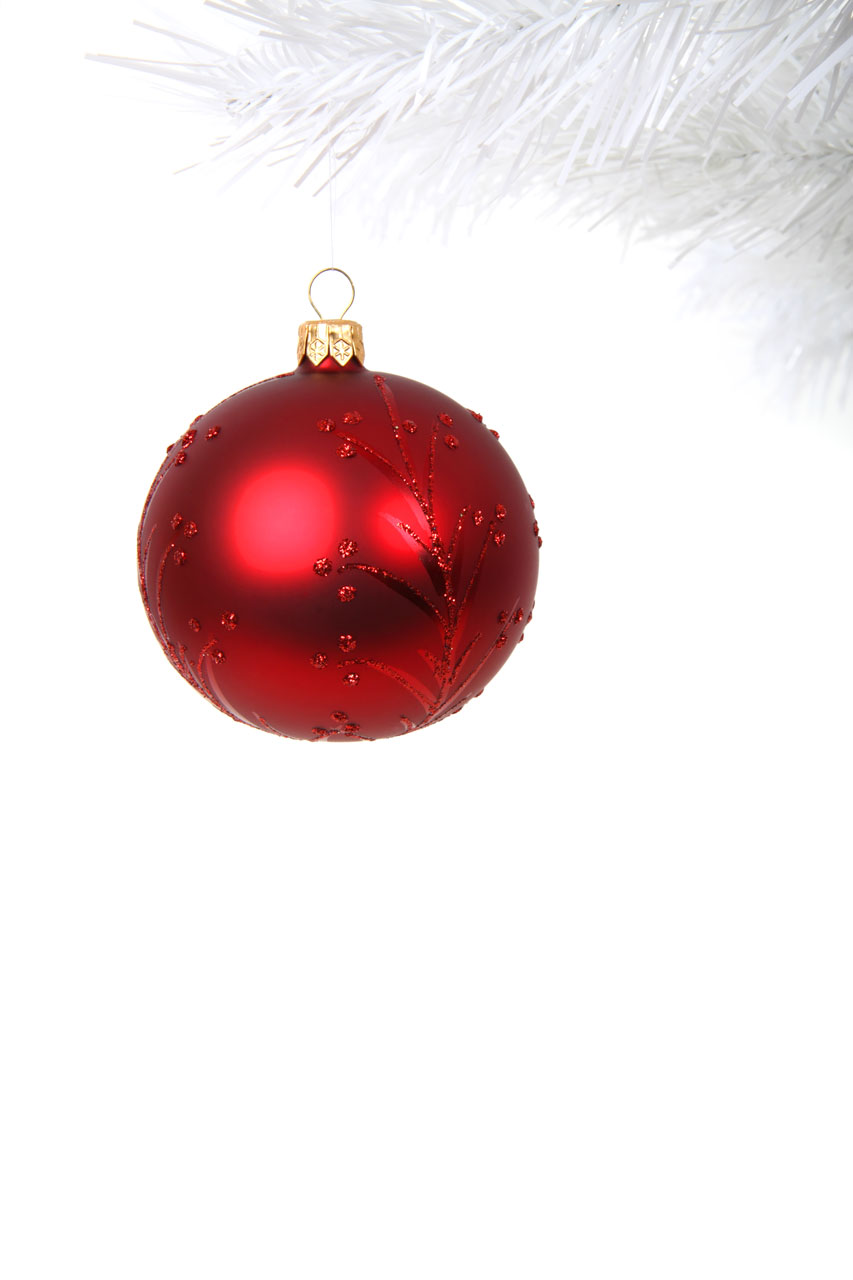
Red christmas ball on branch

Red bauble on white branch isolated on white background.